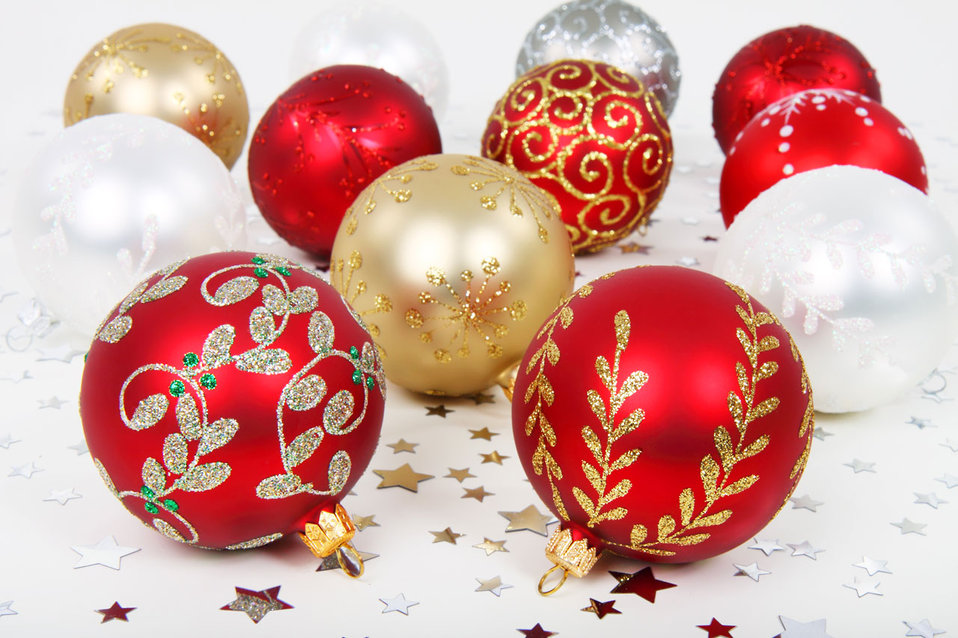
Various christmas baubles and stars on floor.